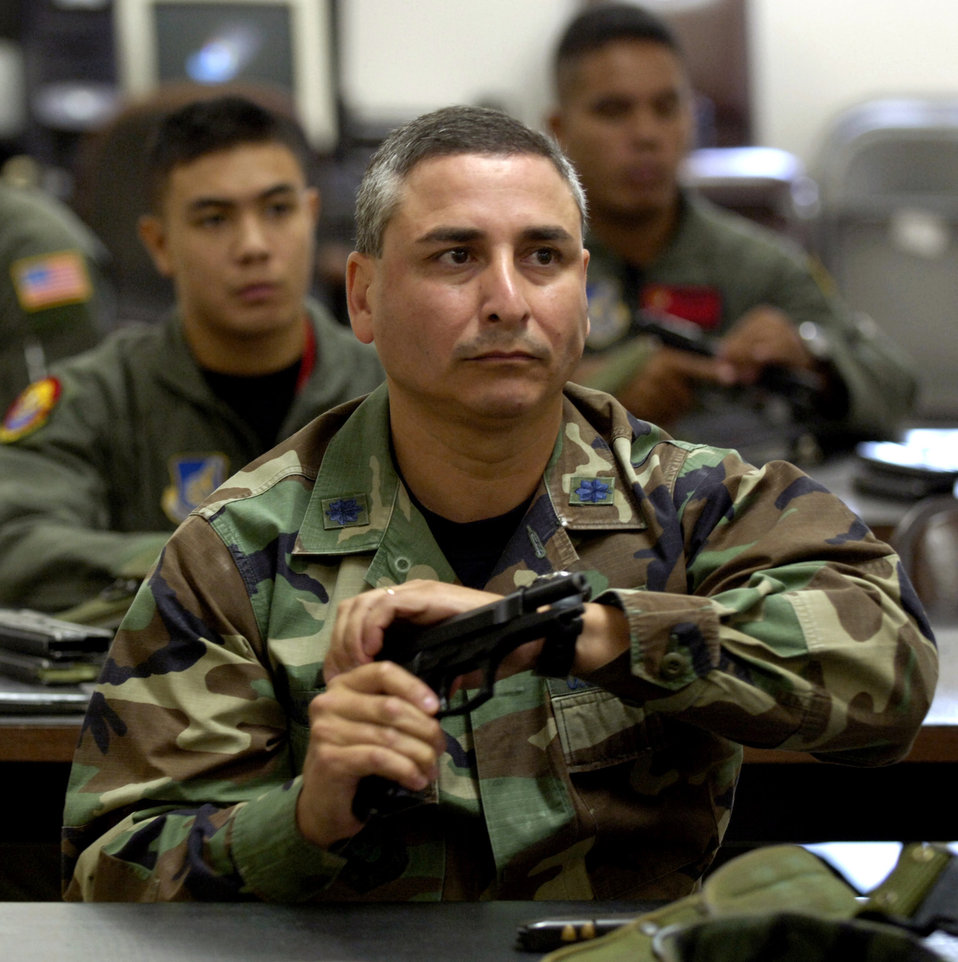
Staying proficient

Lt. Col. Daniel Ponce De Leon listens to instruction during a small-arms training class at the shooting range at Schoefield Barracks, Hawaii, on July 7. The colonel is the chief of officer assignments at Pacific Air Forces Headquarters.